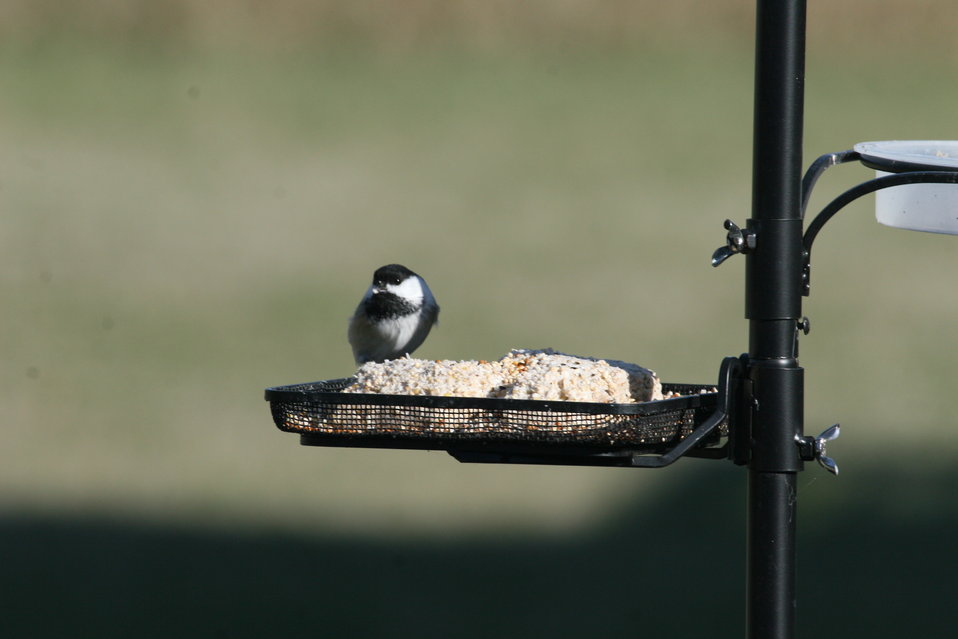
Who's at the Bird Feeder? Black-capped chickadee

This black-capped chickadee is feeding on a high-energy suet cake.

Chickadees are notable for their capacity to lower their body temperature during cold winter nights, as well as their good spatial memory to relocate the caches where they store food.

Chickadees have also been know to be so bold as to feed from your hand!